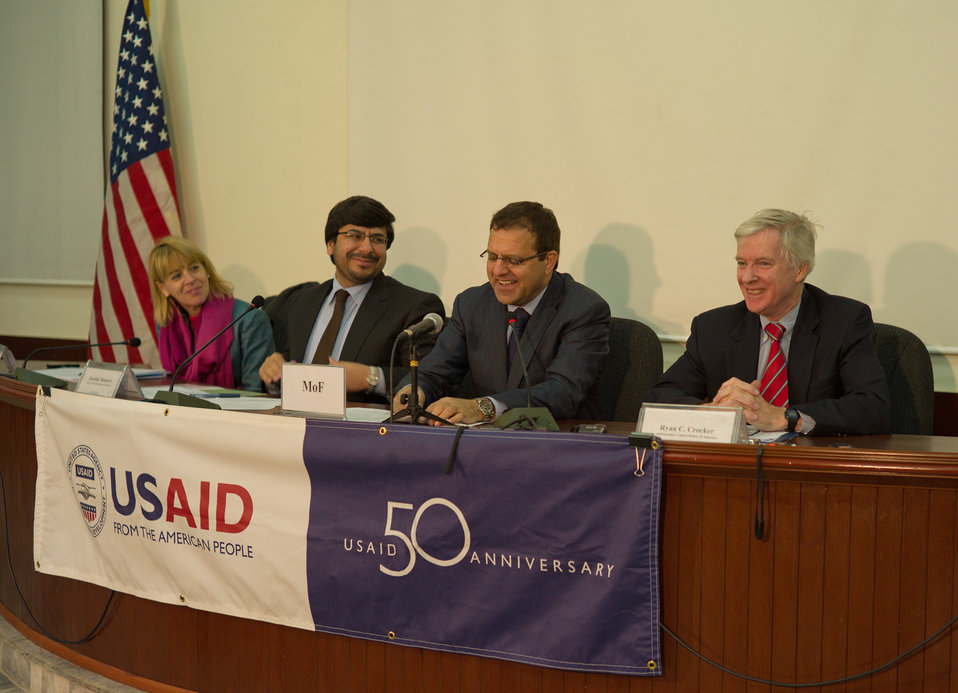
L1001952Refrigerator